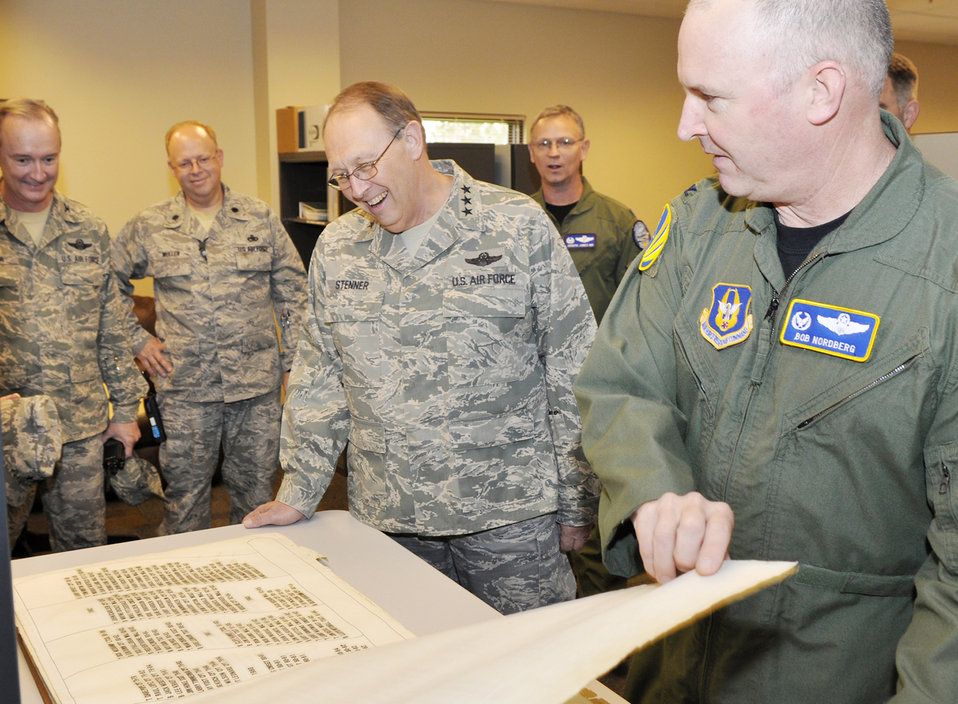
Air Force Reserve adjusts to meet operational demands

Col. Robert Nordberg (right) shows Lt. Gen. Charles E. Stenner Jr. the Combat Flight Instructor Course book Sept. 25, 2009, at Barksdale Air Force Base, La. General Stenner is the commander of Air Force Reserve Command, and moved his permanent residence from Bolling Air Force Base, D.C., to Robins AFB, Ga. Colonel Nordberg is the 917th Operations Group commander.